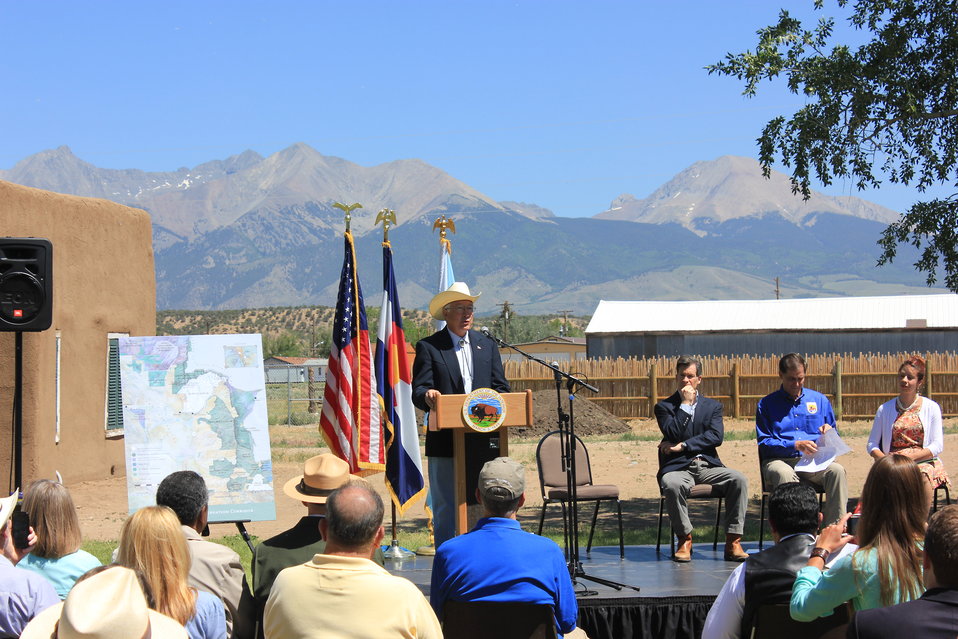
Historic Conservation Easement in Sangre de Cristo Mountains